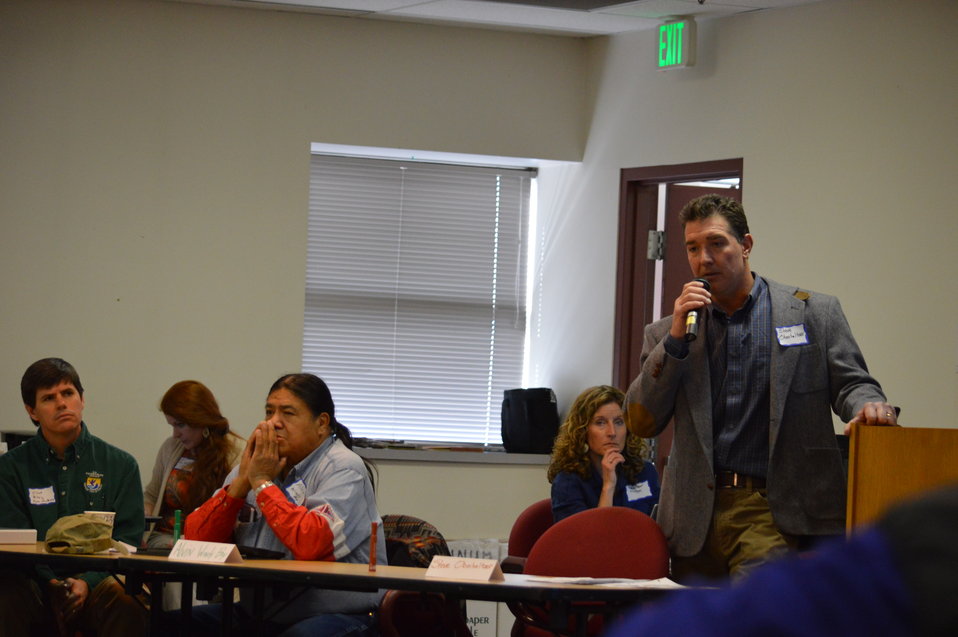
Eagle Summit III - Panel Discussion

Steve Oberholtzer starts the panel discussion at the Eagle Summit III in Denver, Colorado on March 20, 2014 at the Rocky Mountain Arsenal National Wildlife Refuge.